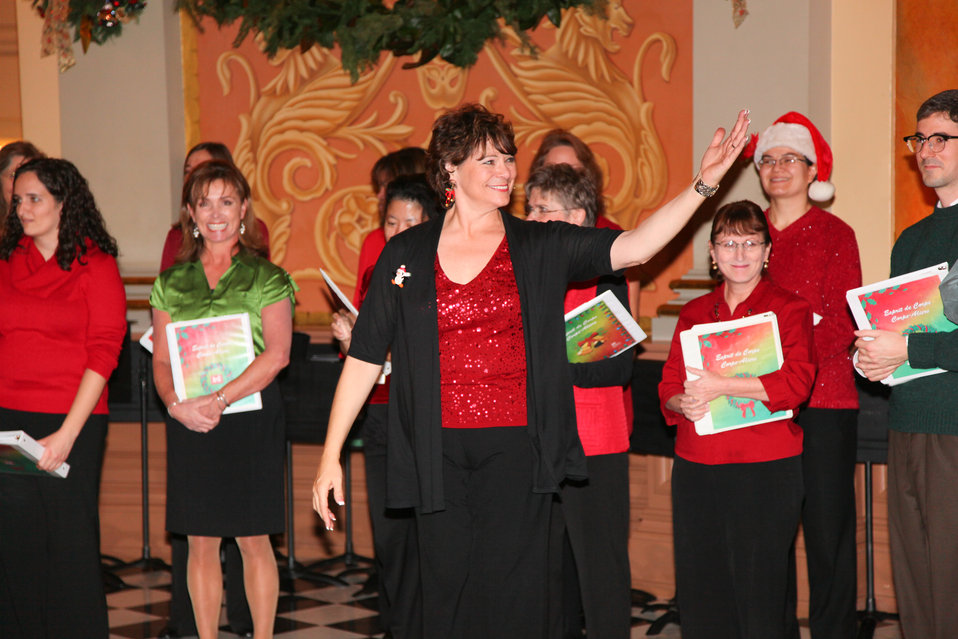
Corps Aliers at the State Capitol

SACRAMENTO, Calif. (Dec. 14, 2010) - The singing group Corps Aliers, led by Lynne Erickson (center) of the resource management office, provided some holiday cheer at the California State Capitol rotunda here with an a cappella performance Dec. 14.